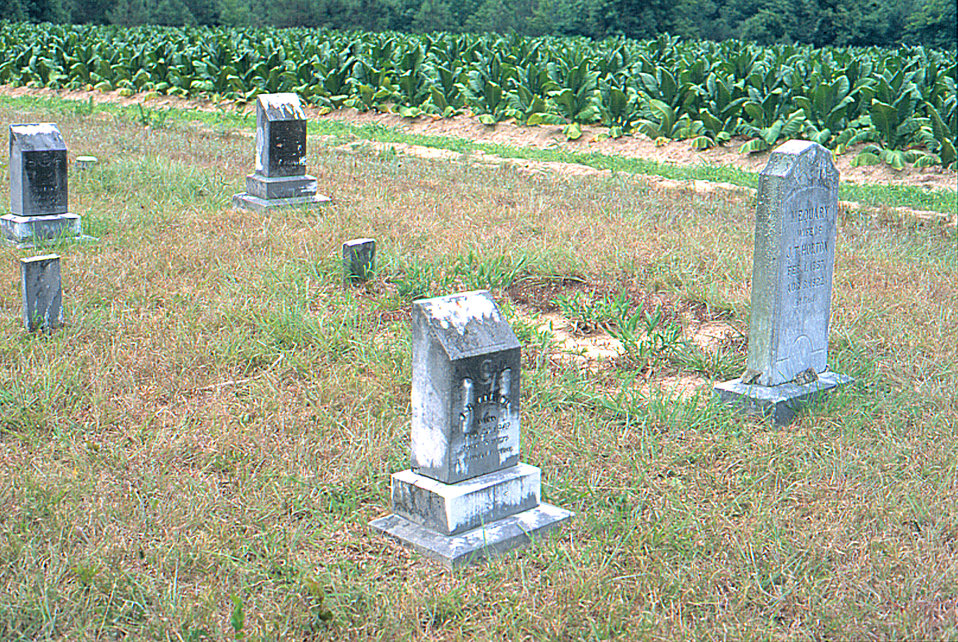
Tobacco field with graves